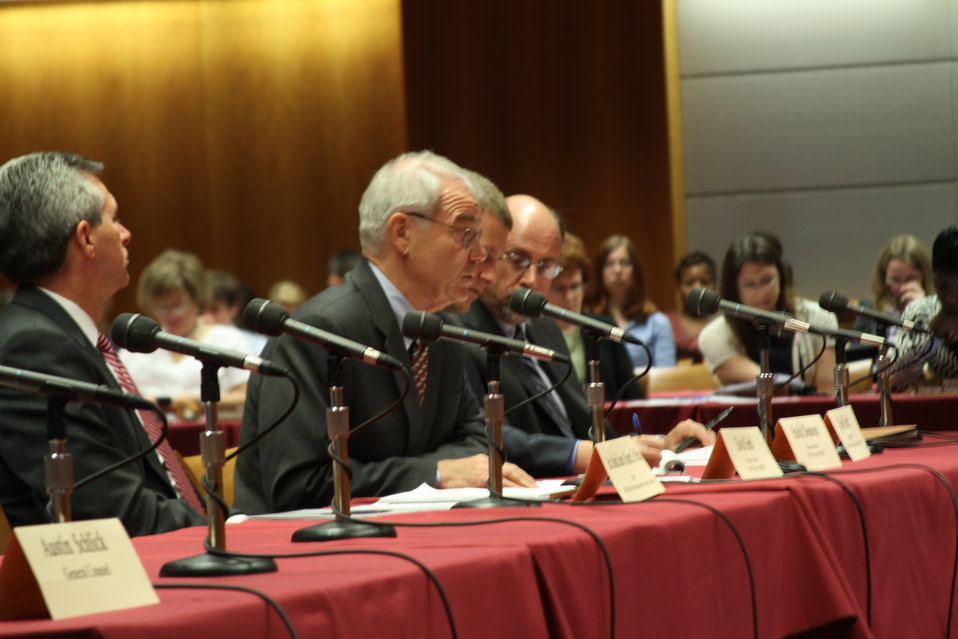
7/12/2011 Open Commission Meeting

The Public Safety and Homeland Security Bureau's remarks regarding Wireless E911 Location Accuracy Requirements at the July 2011 Open Commission Meeting